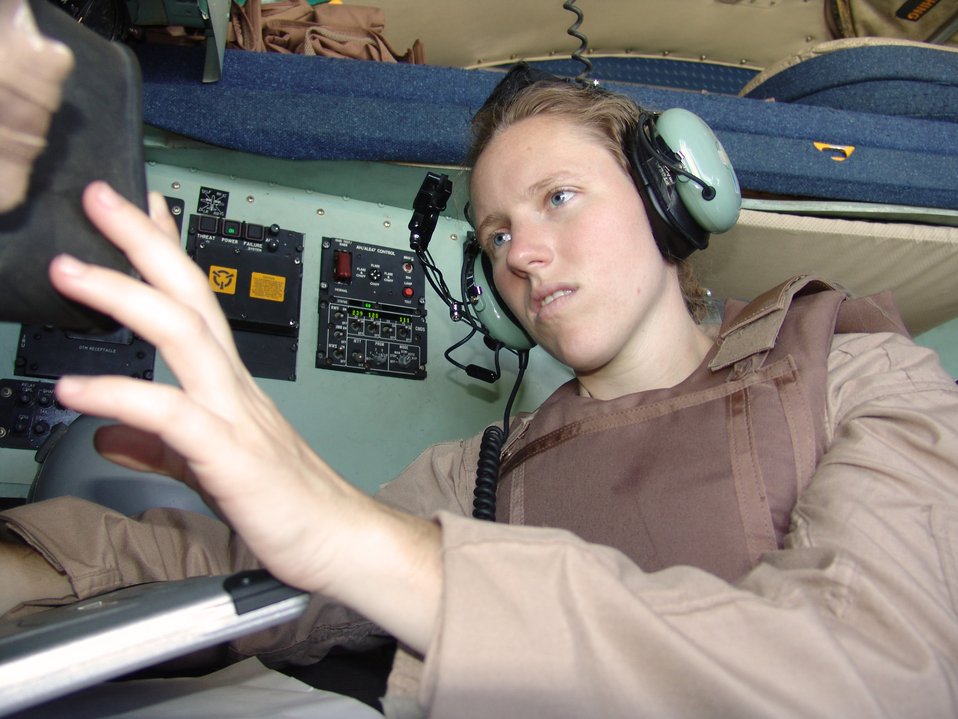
Mission time

OVER IRAQ -- Capt. Maryanna Wienbroeer verifies flight coordinates during a tactical airlift mission aboard a C-130 Hercules. Captain Wienbroeer is a C-130 navigator with the 737th Expeditionary Airlift Squadron at a forward-deployed location and is from Pope Air Force Base, N.C.